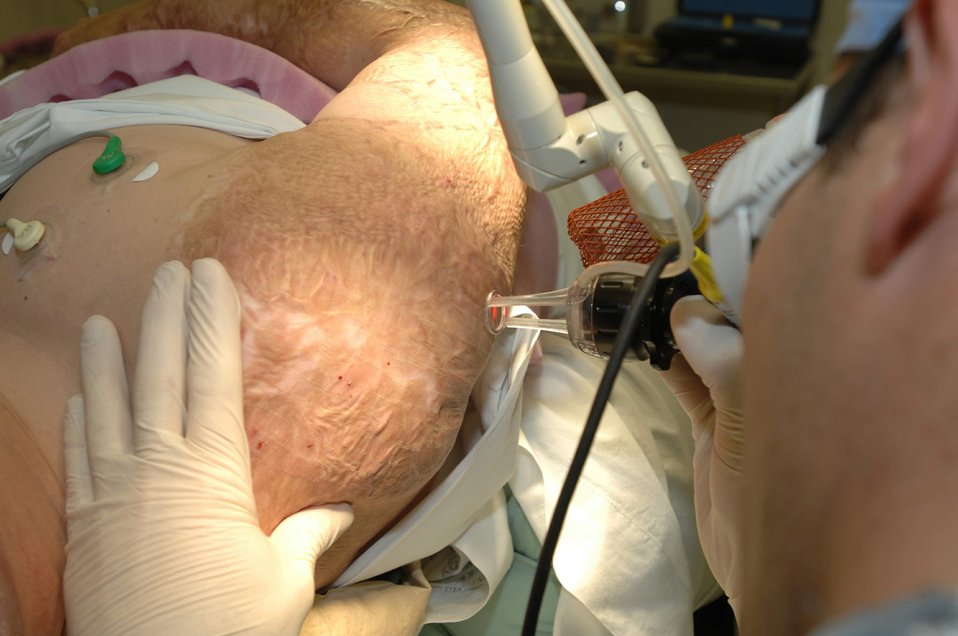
Laser treats wounded warrior scars

Maj. (Dr.) Chad Hivnor treats a wounded warrior's scars May 15 using a state-of-the-art fractional laser. He is the pediatric dermatology chief for the 59th Medical Wing at Wilford Hall Medical Center, Lackland Air Force Base, Texas.